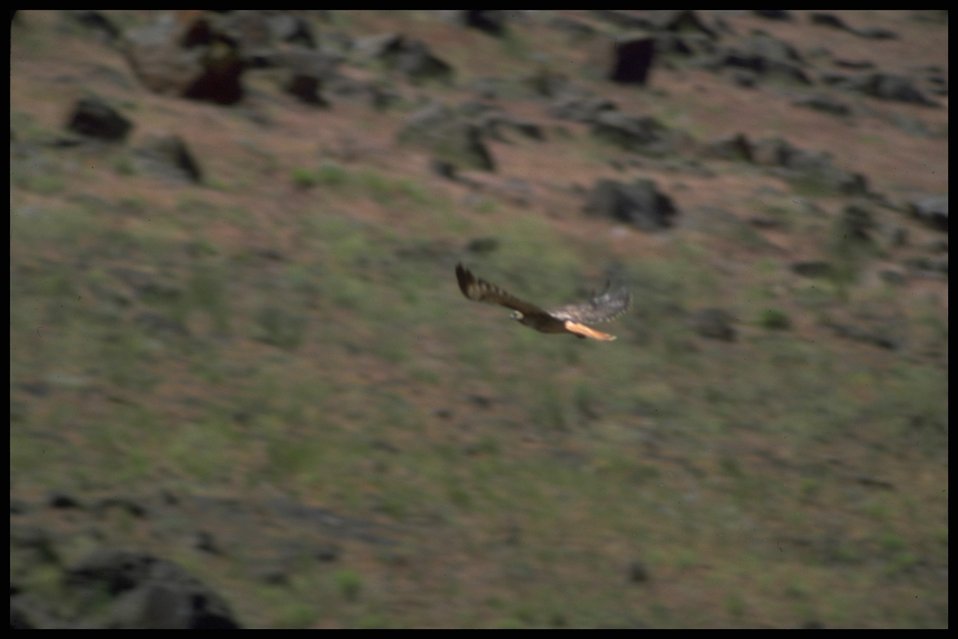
Far shot of Red Tailed Hawk in flight, Lakeview District.